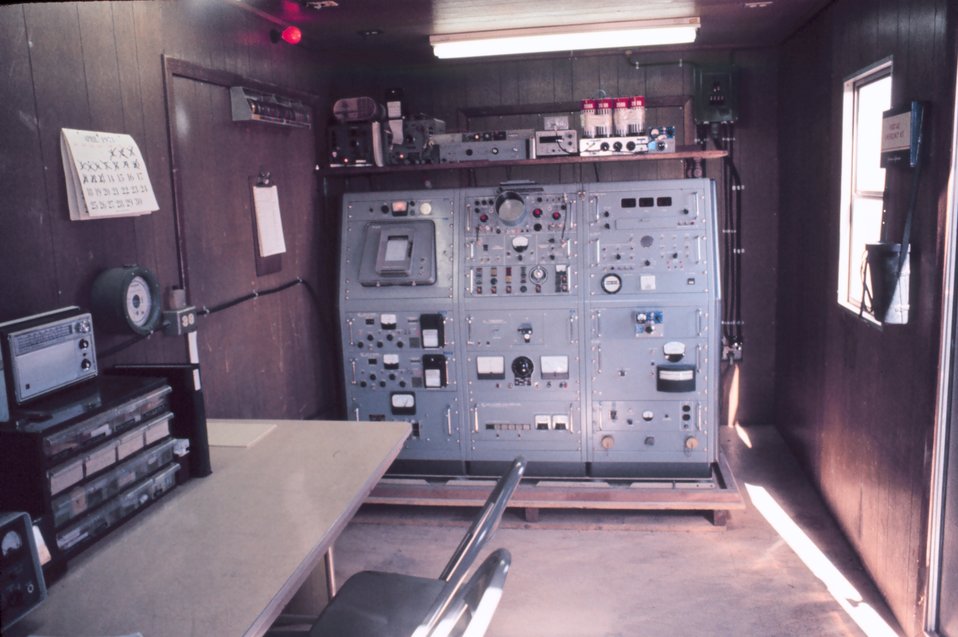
Station Number 003 - occupied in 1965 and 1966 Party chiefs - George Cole, Slim Pickens, and Jeff Gammon. 47 11 7 North Latitute. 240 39 44 East Longitude.